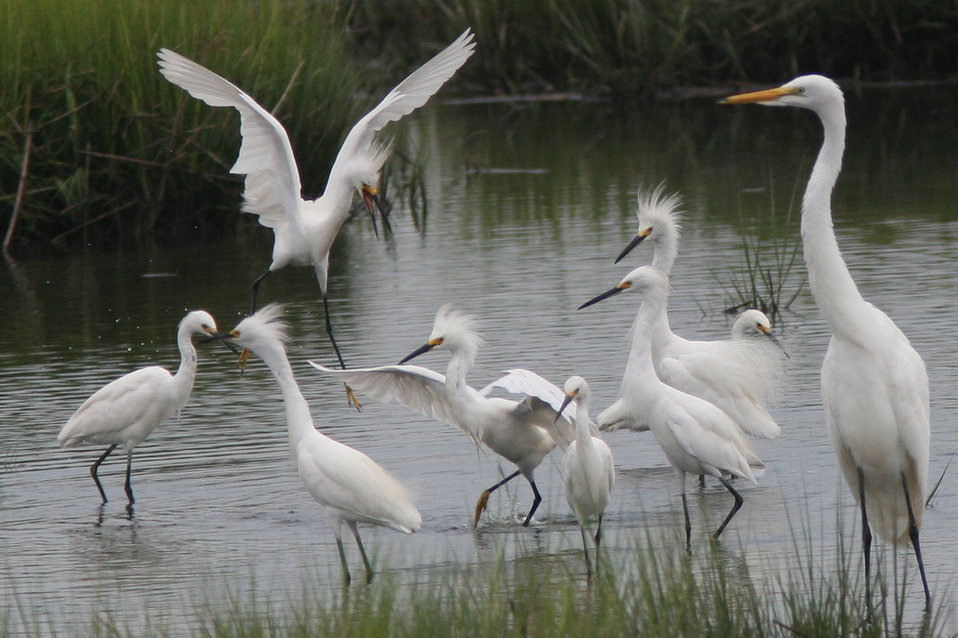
egrets

snowy egrets and great egret
Brigantine National Wildlife Refuge, NJ
August 2008